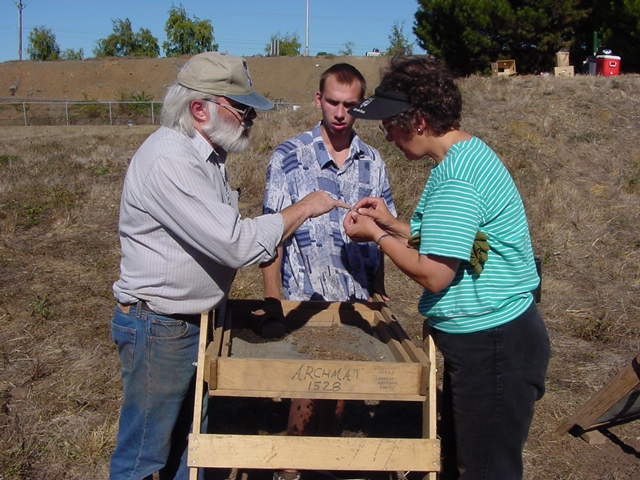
Isaac Barner, Jan Moore, and Narama Scherer examine possible artifacts.